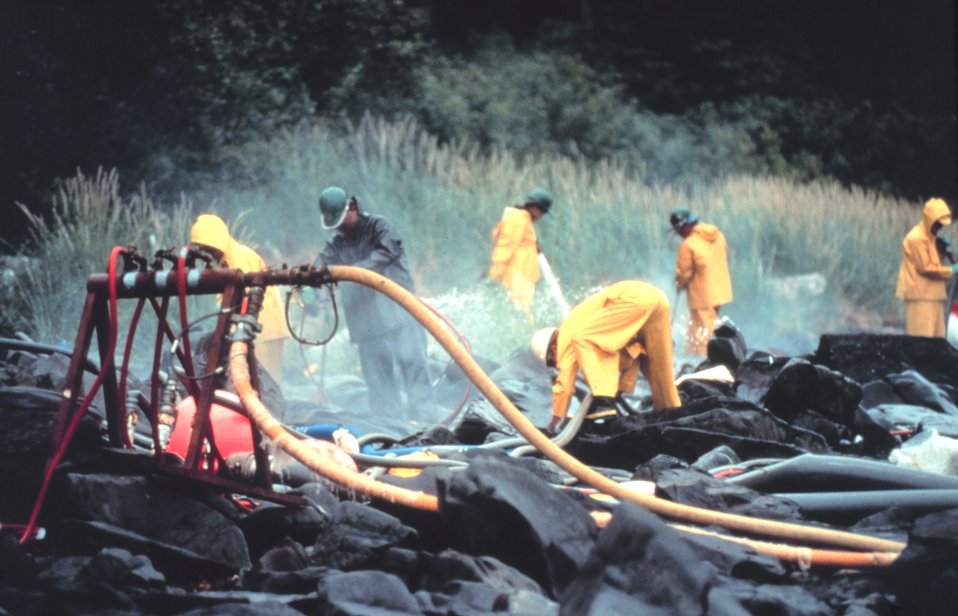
Pressure cleaning rocks on intertidal zone.